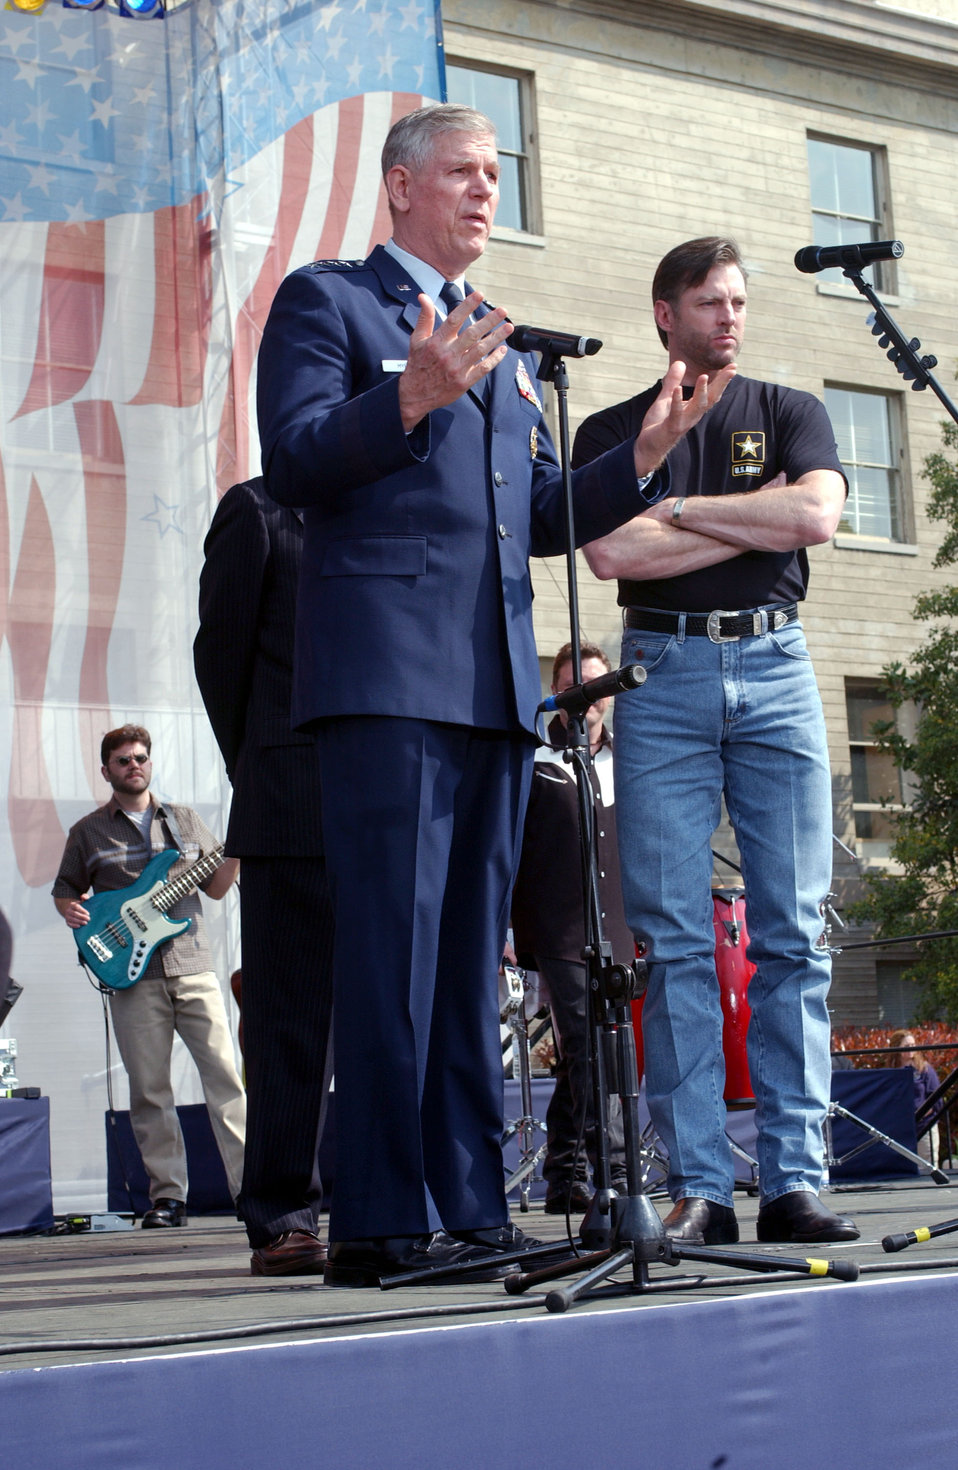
Concert at the Pentagon

ARLINGTON, Va. -- Country singer Darryl Worley performed a concert at the Pentagon that was broadcast live to servicemembers overseas April 16. Air Force Gen. Richard Myers (pictured), chairman of the Joint Chiefs of Staff, Deputy Secretary of Defense Paul Wolfowitz and Secretary of Defense Donald Rumsfeld were among the guests at the concert.